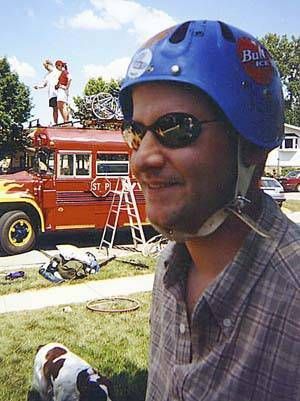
It is so licensed because I took it myself.